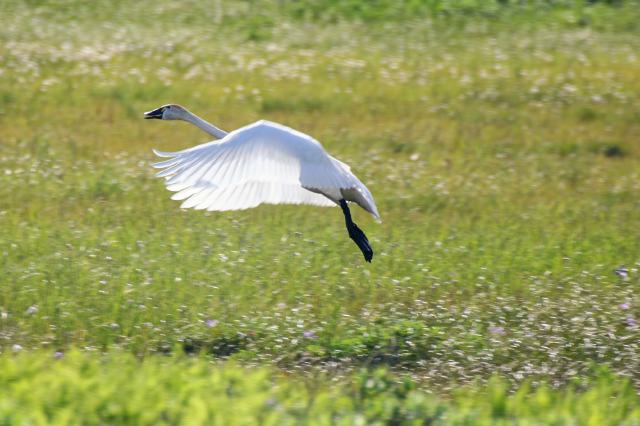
trumpeter swan, Alaska Maritime Refuge, by Steve Ebbert, USFWS